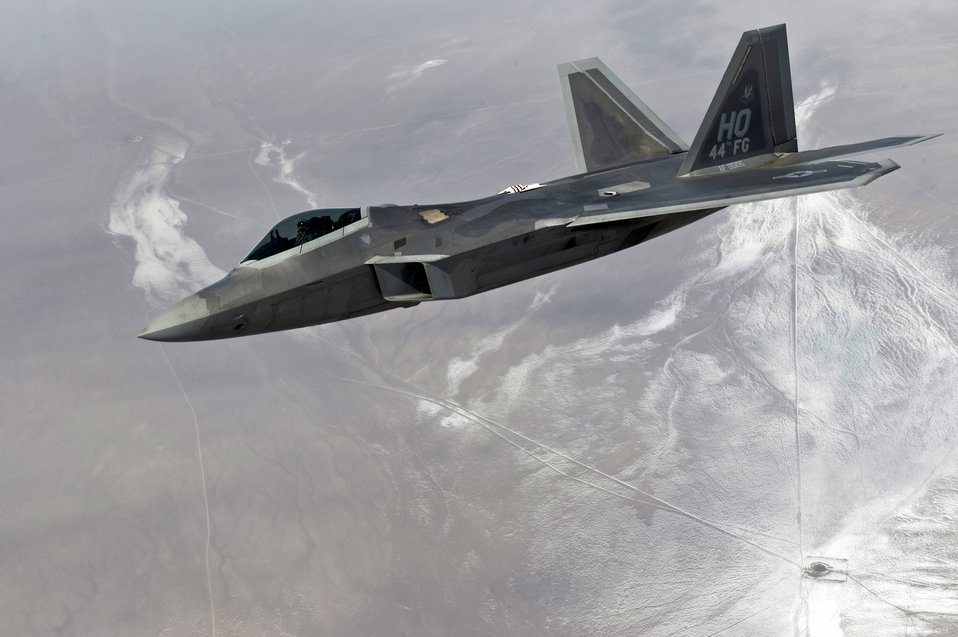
At home on the range

An F-22 Raptor from the 49th Fighter Wing at Holloman Air Force Base, N.M., flies over the Nevada Test and Training Range March 2, 2011, during a Red Flag training mission.